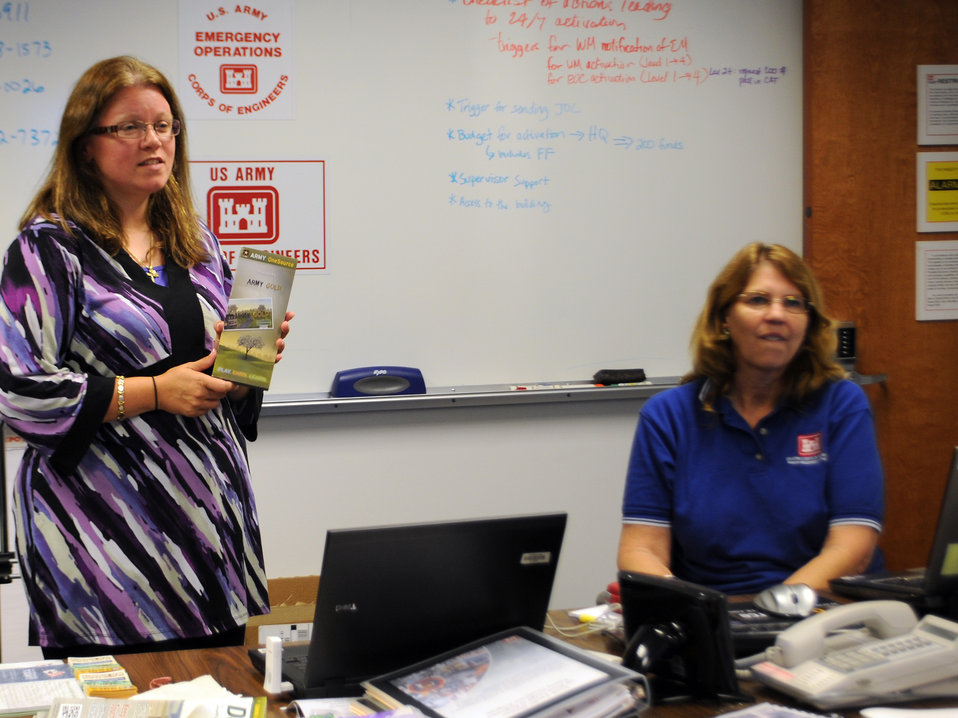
South Pacific Division holds regional Family Readiness Network Workshop

Wendy Van Houten (left), community support coordinator at Army OneSource, speaks to the U.S. Army Corps of Engineers South Pacific Division Regional Family Readiness Network during a two-day workshop held at the Sacramento District’s headquarters Jul. 14. Van Houten explained what resources are available to the Corps family through Army OneSource, such as financial planning tips, discounts on flights, attraction tickets, vacation packages, and children books and videos on deployment. The resources are not only available to deployees and their family members, but to all Corps employees, said Van Houten.